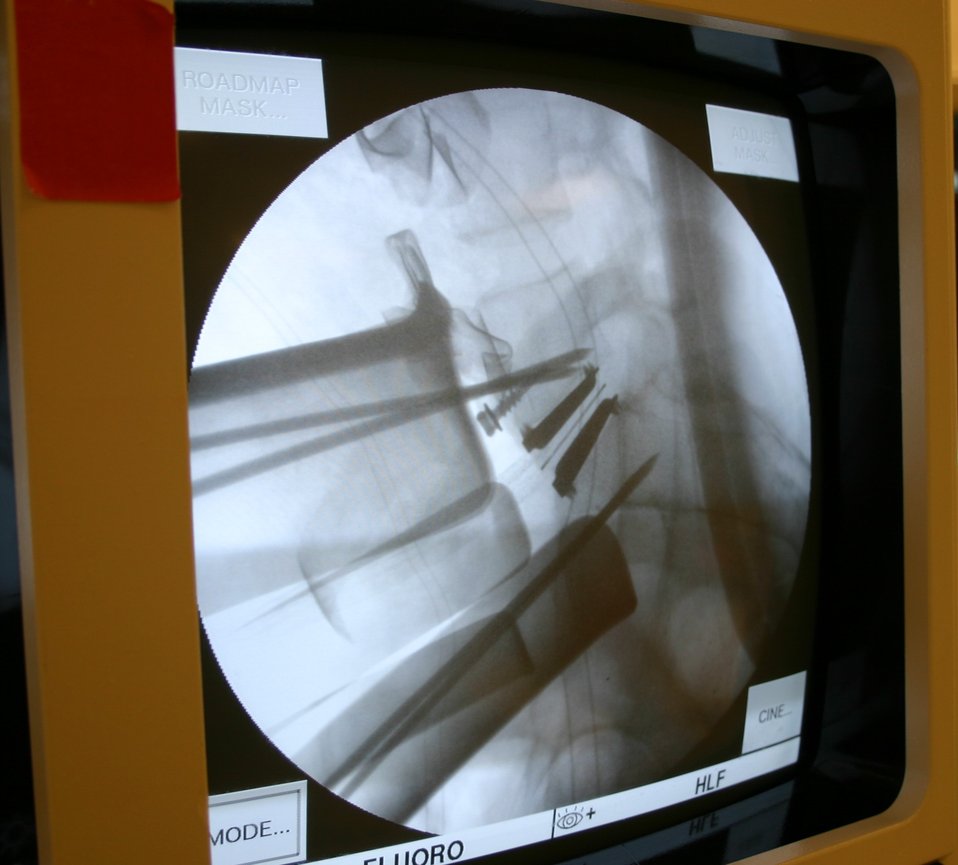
Air Force doctors perform alternative back surgery

LACKLAND AIR FORCE BASE, Texas -- An X-ray shows the newly placed artificial disc so doctors can ensure proper alignment and movement. With the new disc, a patient is able to regain movement at that site and is able to go back to work within two weeks.